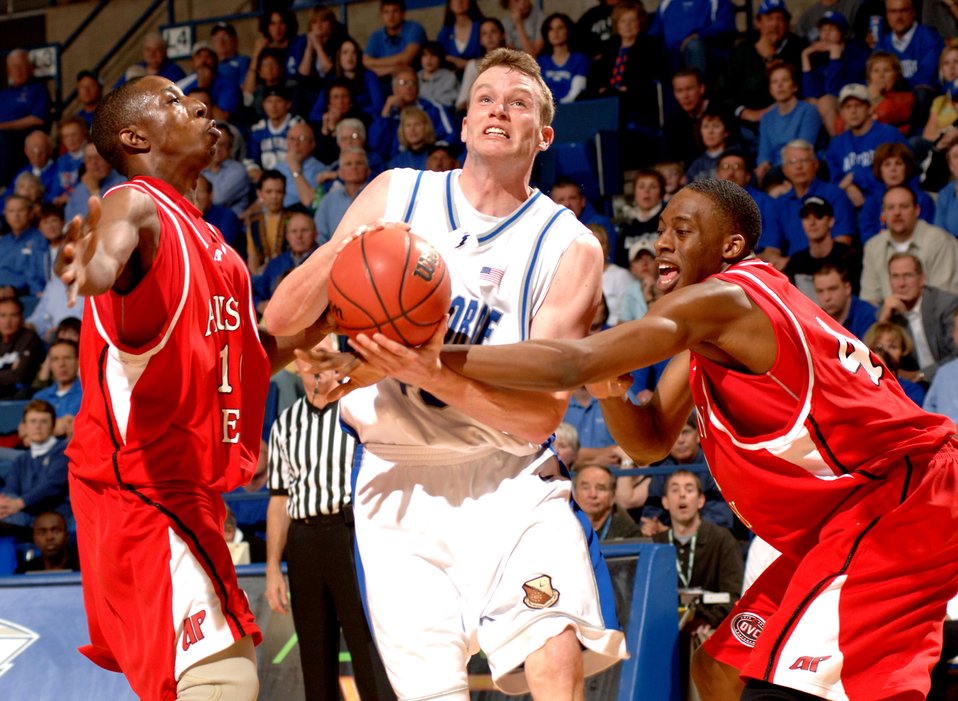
Falcons fly high in NIT debut

Air Force center Nich Welch is fouled by Austin Peay defender Duran Roberson as he drives to the basket March 14 at the Air Force Academy's Clune Arena. By defeating Austin Peay 75-51, Air Force won its first post-season game in school history and advances after the first round of the National Invitation Tournament.